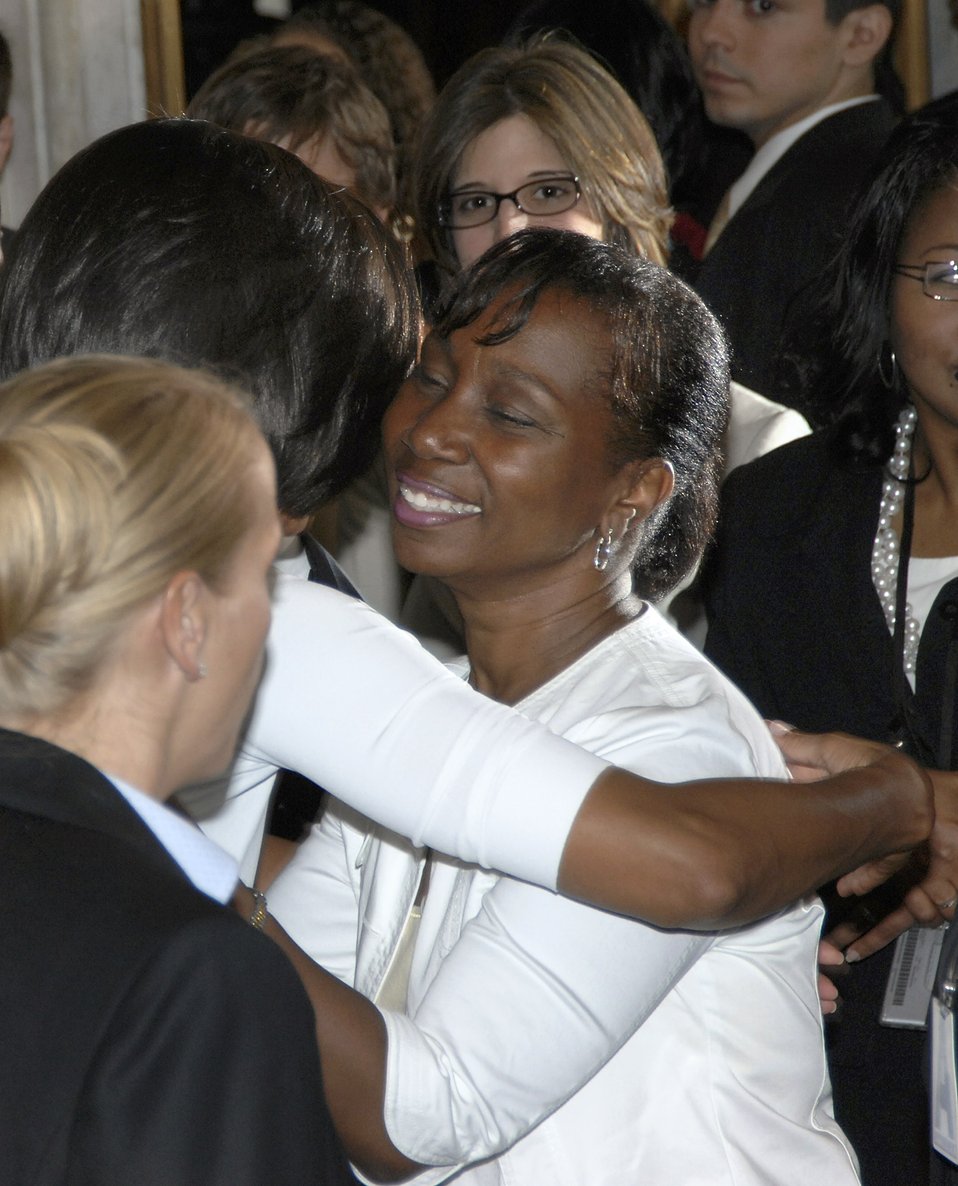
Michelle Obama visits the Treasury Department, 7/7/10

First Lady Michelle Obama hugs guest Valerie Hunter, an IRS revenue officer in Austin, Texas, who has served our nation with distinction for almost three decades. Valerie is also the widow of the late Vernon Hunter who was killed in a violent attack at the Austin IRS offices this past February.